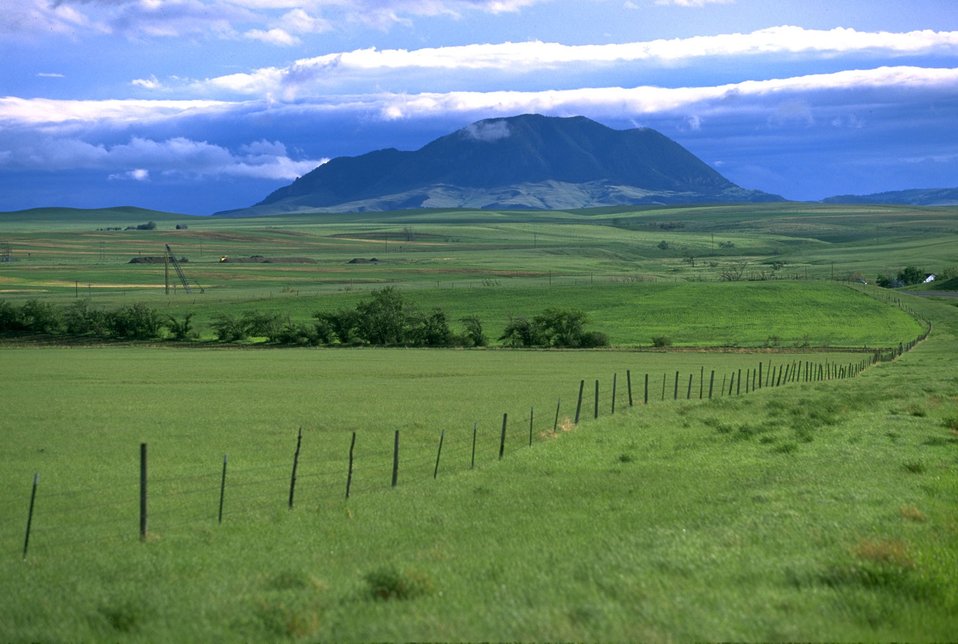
Black Butte surrounded by prairie grasslands